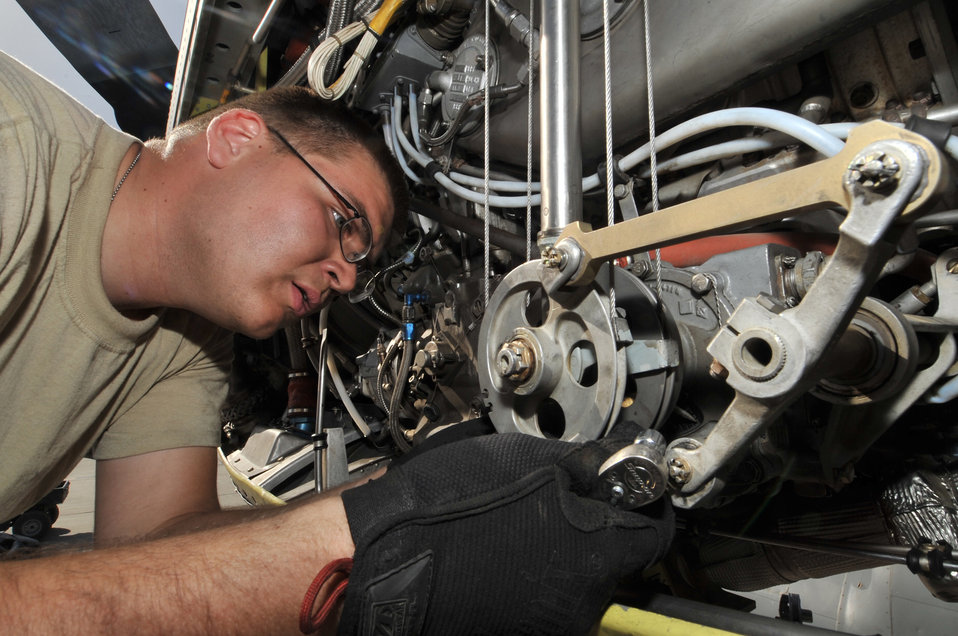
Keep things running

Senior Airman William Hills performs maintenance on an EC-130H Compass Call aircraft May 16, 2011, at Bagram Airfield, Afghanistan. Airman Hills is an aerospace propulsion specialist assigned to the 455th Expeditionary Aircraft Maintenance Squadron.